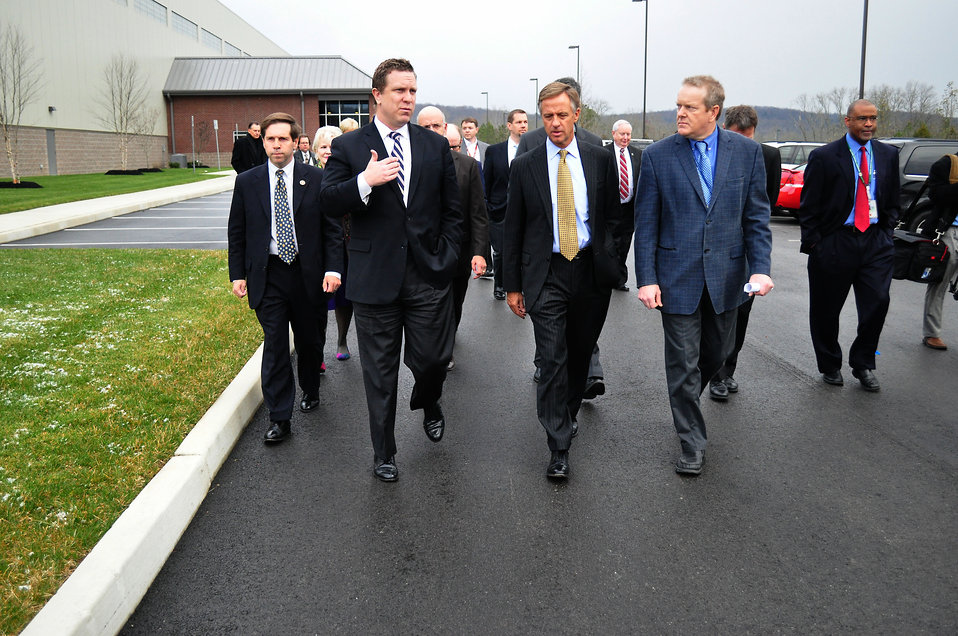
Carbon Fiber Technology Facilty Open House Oak Ridge Tennessee

13-025 DOE photo Lynn Freeny